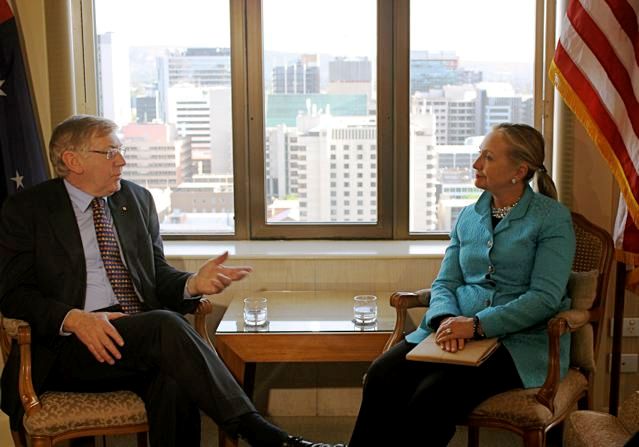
Secretary Clinton Meets With Australian Federal Resources Minister Ferguson

U.S. Secretary of State Hillary Rodham Clinton meets with Australian Federal Resources Minister Martin Ferguson in Adelaide, Australia, November 15, 2012.